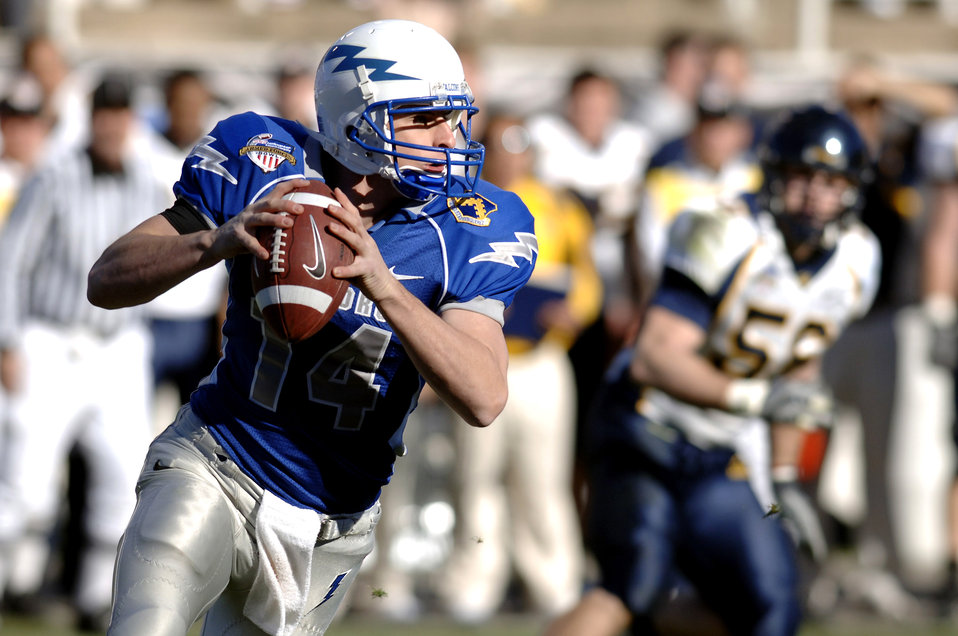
Falcons bowl return a bear

Junior quarterback Shea Smith is flushed from the pocket by the California defense. Smith ran four times for 33 yards and completed four passes for 45 yards against the California Golden Bears in the Bell Helicopter Armed Forces Bowl at Amon G. Carter Stadium Dec. 31.